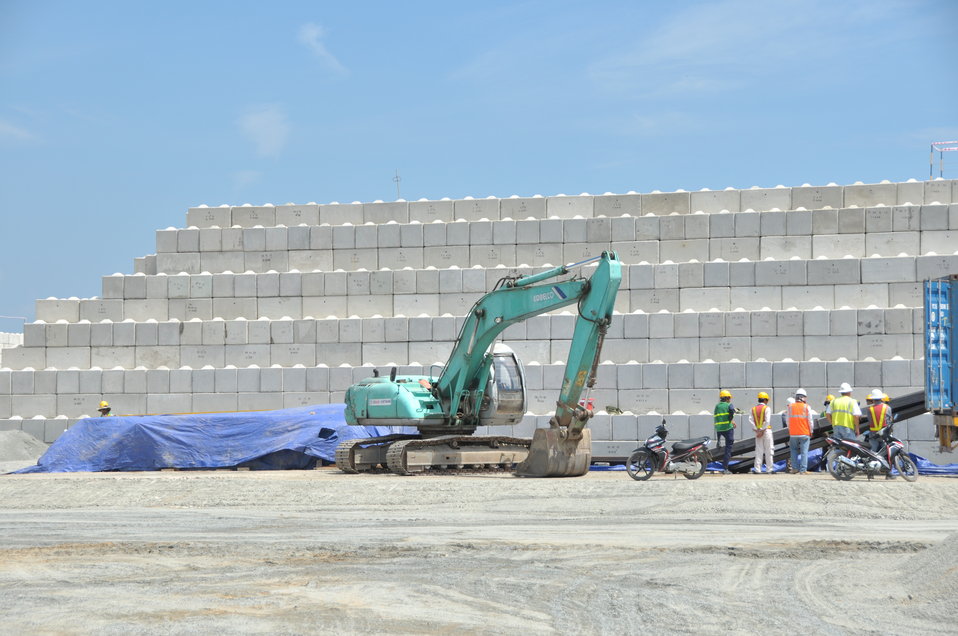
Site construction at the Environmental Remediation of Dioxin Contamination at Danang Airport

Progress at the Danang Airport remediation site
April 23, 2013